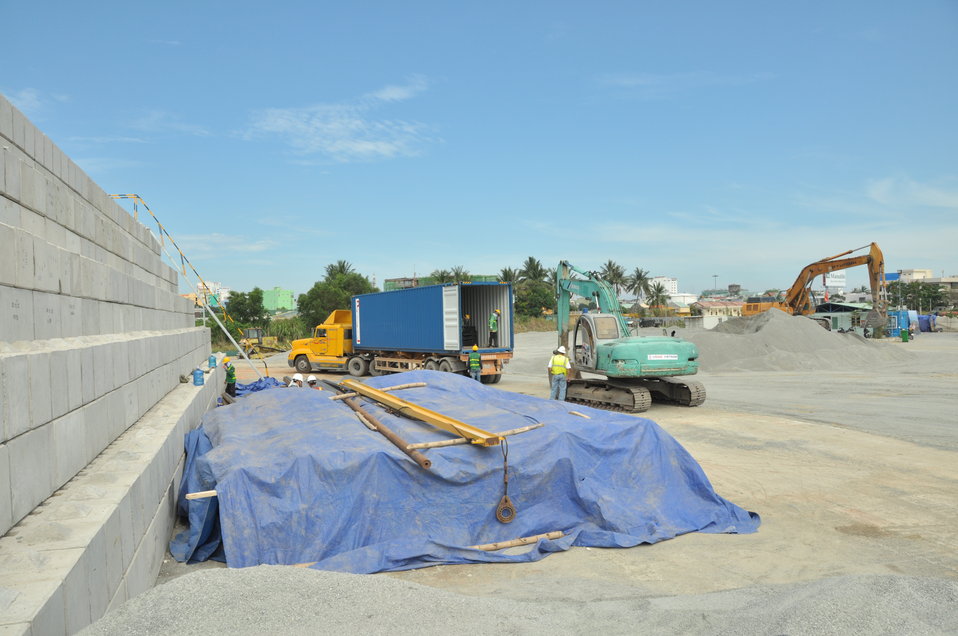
Site construction at the Environmental Remediation of Dioxin Contamination at Danang Airport

Progress at the Danang Airport remediation site
April 23, 2013